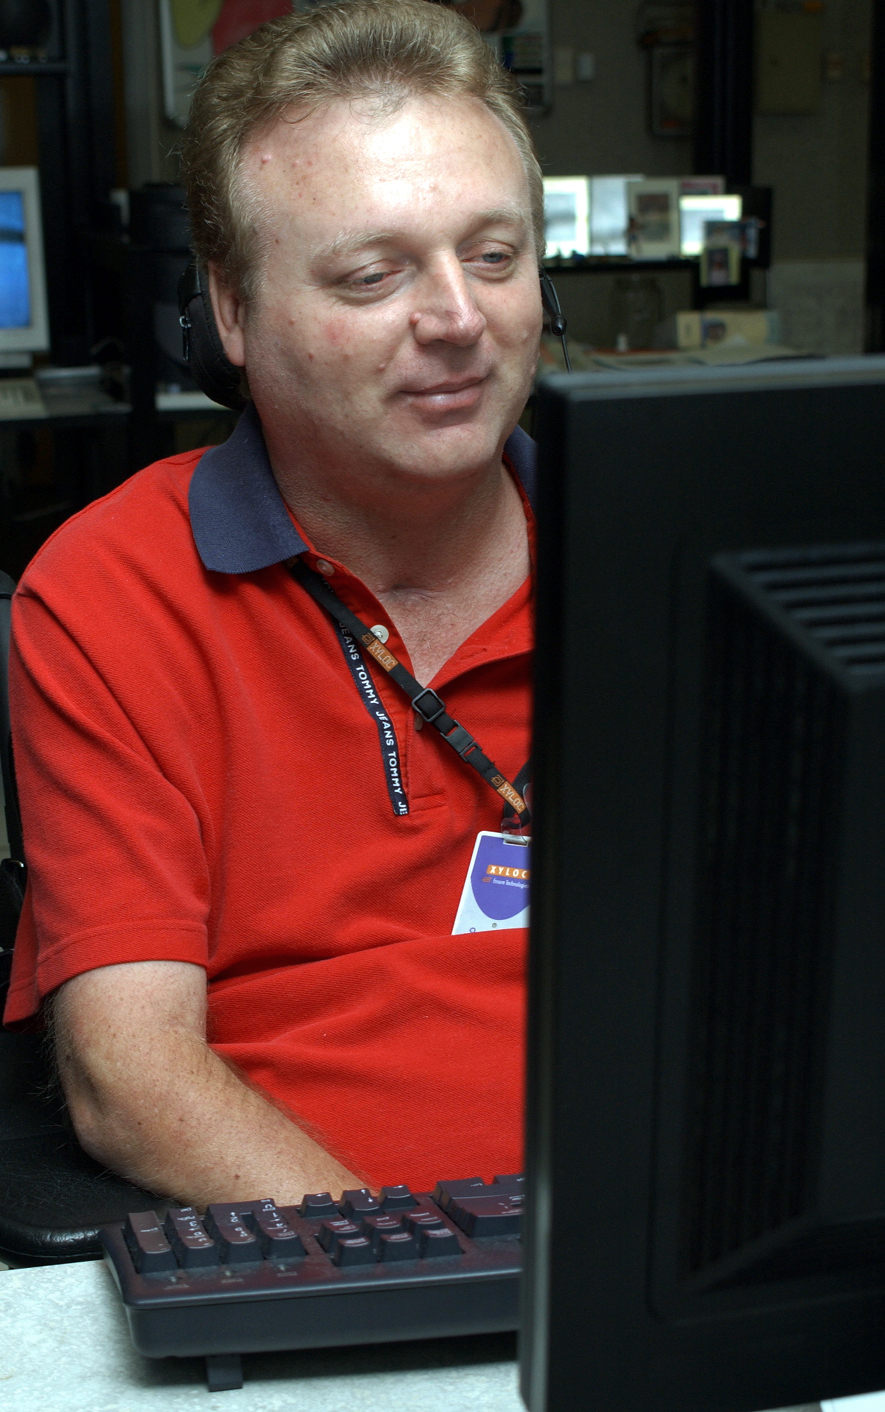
'Master problem solver' wins Air Force award

KEESLER AIR FORCE BASE, Miss. -- Tony Bufford is the winner of the Air Force's Outstanding Employee with a Disability Award for 2004. Paralyzed in a 1990 diving accident, he is a quadriplegic with no mobility from the waist down and limited mobility from the neck down. As the system administrator for the 81st Supply and Transportation squadrons here, Mr. Bufford is responsible for four local area networks providing service to 287 users and 318 personal computers with $1.3 million of associated equipment.